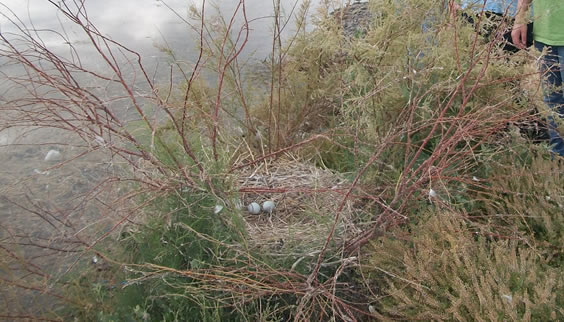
Nest at Bear River Migratory Bird Refuge

Great Blue Heron nest at the Bear River Migratory Bird Refuge.